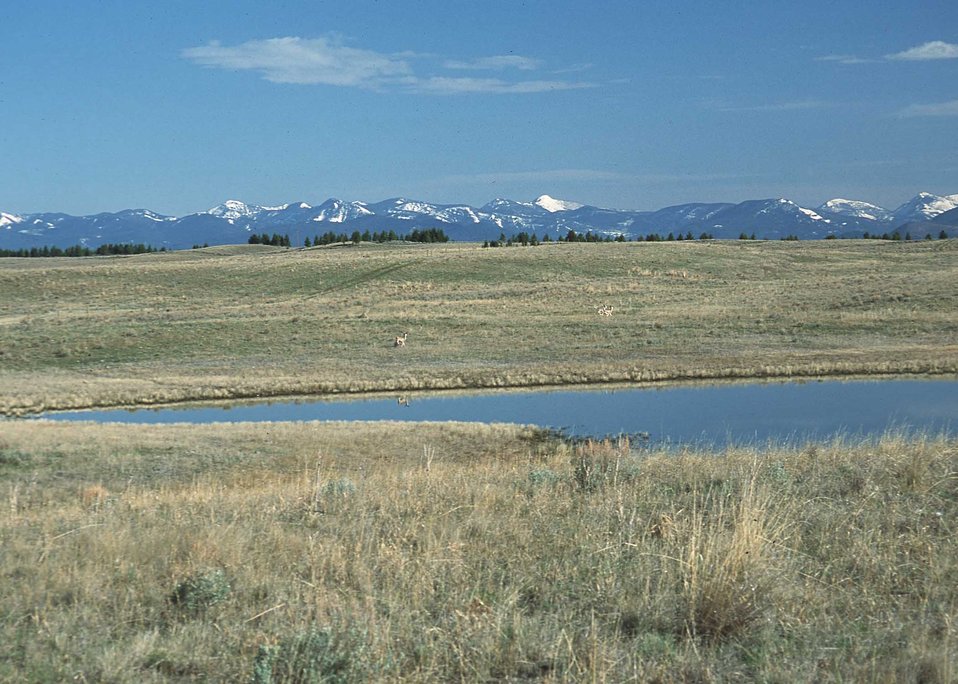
Pond in Powell County, MT.